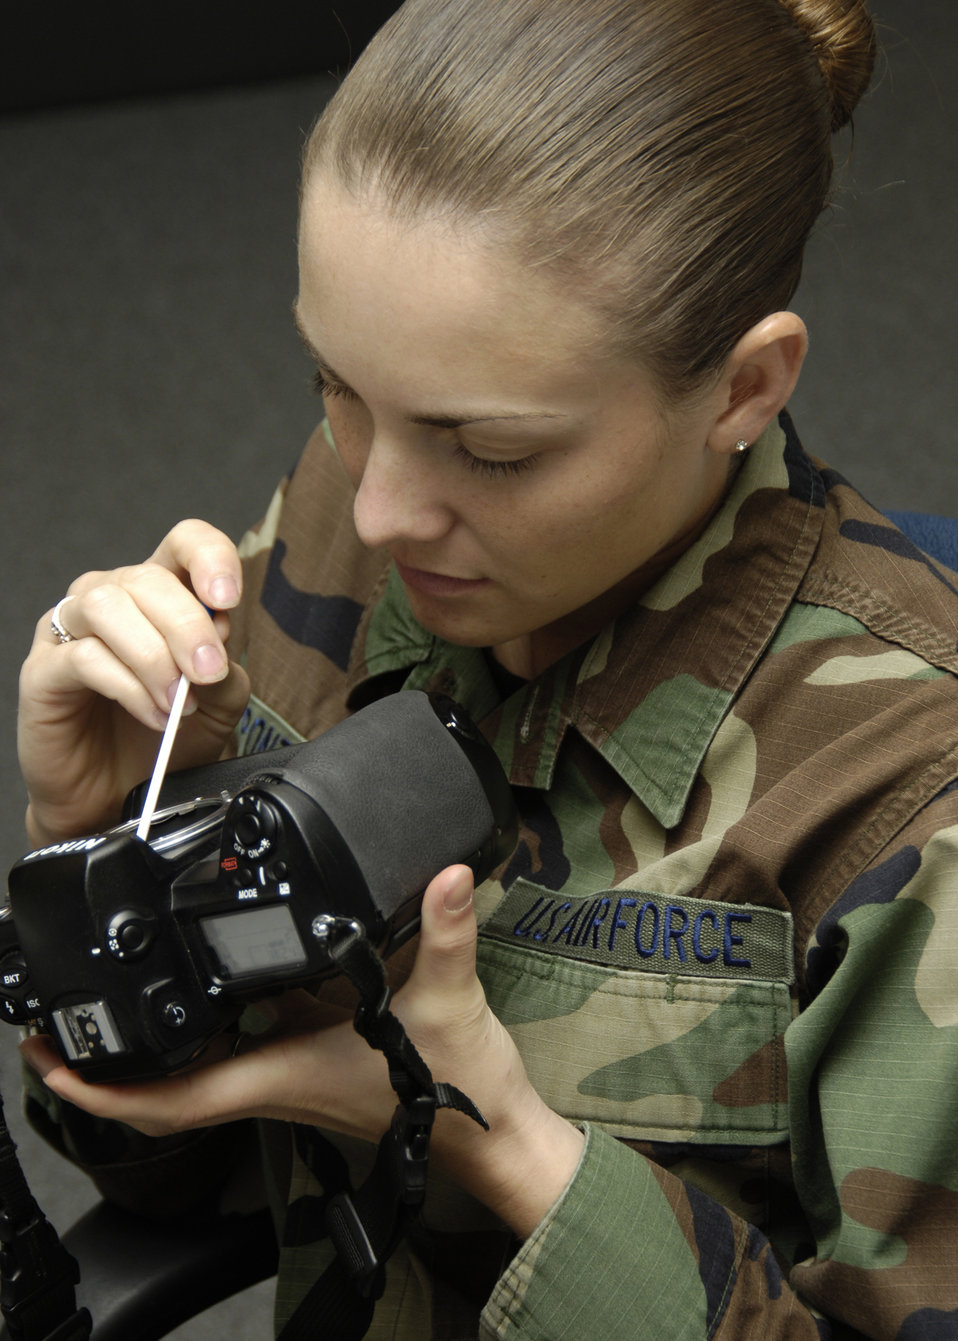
Picture perfect

DAVIS-MONTHAN AIR FORCE BASE, Ariz. -- Airman 1st Class Christina Ponte, a still photographer with the 355th Communications squadron here, checks her Nikon D1X camera. She did her function check before going on an assignment Oct. 13.